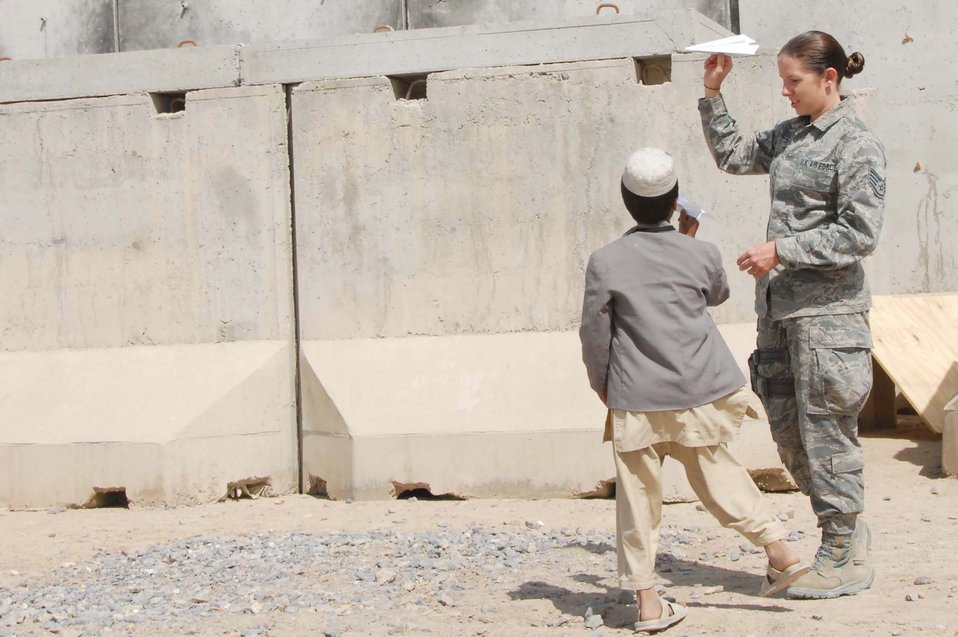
Airman build paper airplanes and relationships

Staff Sgt. Amanda Menlove prepares to show an Afghan boy how to throw a paper airplane at a school April 30, 2011, at Kandahar Airfield, Afghanistan. She is part of a group of Airmen who volunteered to participate in activities at the school for the day that included building the paper airplanes and playing soccer. Sergeant Menlove is assigned to the 451st Air Expeditionary Wing command post at Kandahar Airfield.